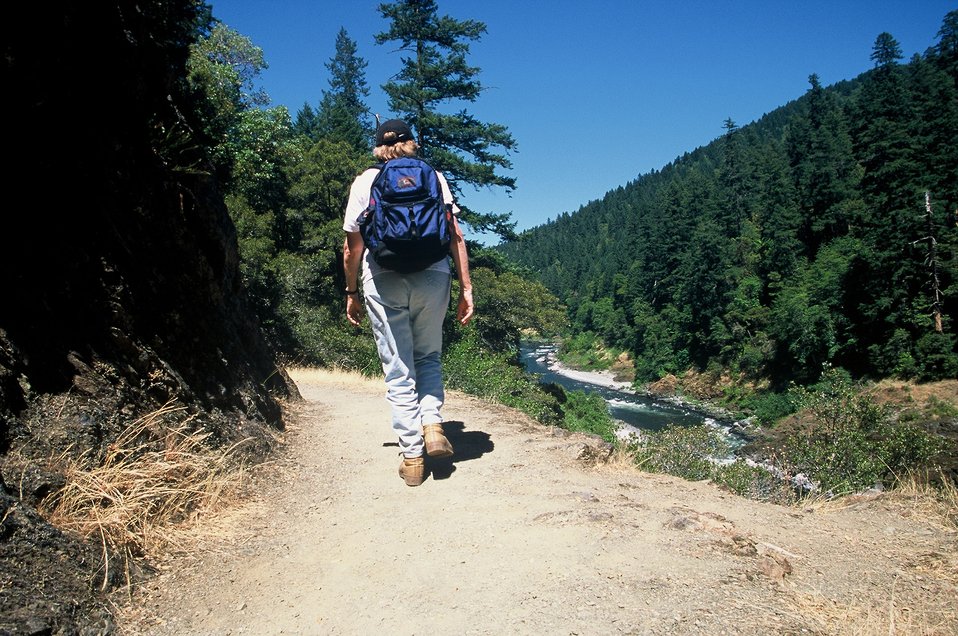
Hikers on trail between Mule Creek and Blossom. Looking up river.